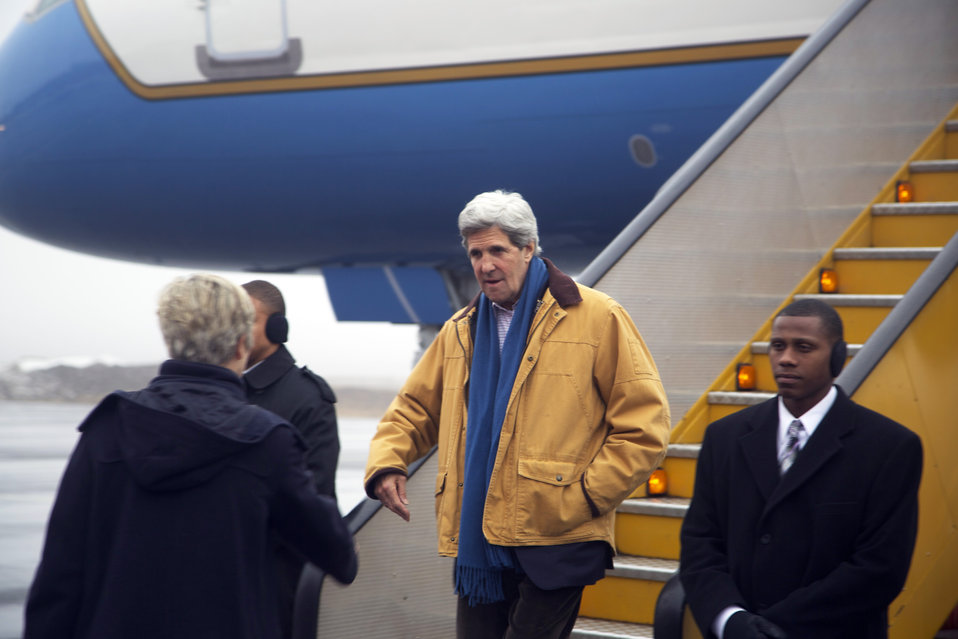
Secretary Kerry Arrives in Kiruna, Sweden

U.S. Secretary of State John Kerry is greeted by Swedish Ministry of Foreign Affairs' Chief of Protocol Caroline Vicini upon arriving in Kiruna, Sweden, for the Arctic Council’s Ministerial Meeting on May 14, 2013.